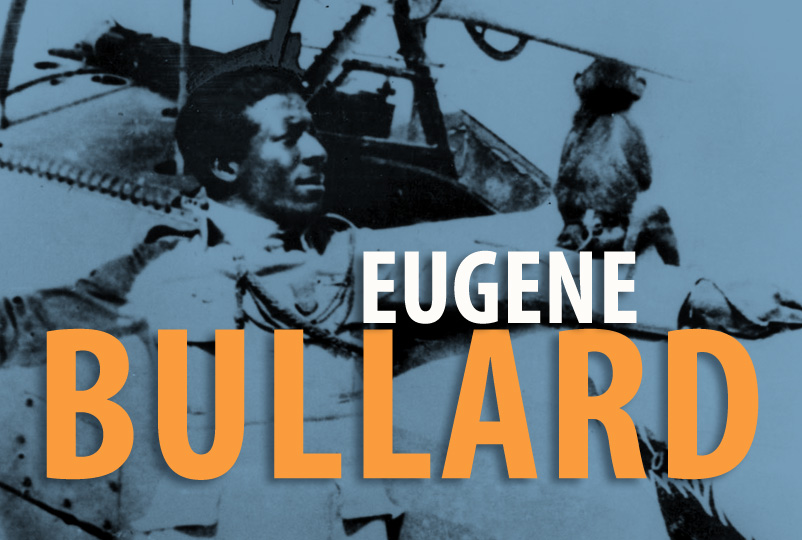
Eugene Bullard